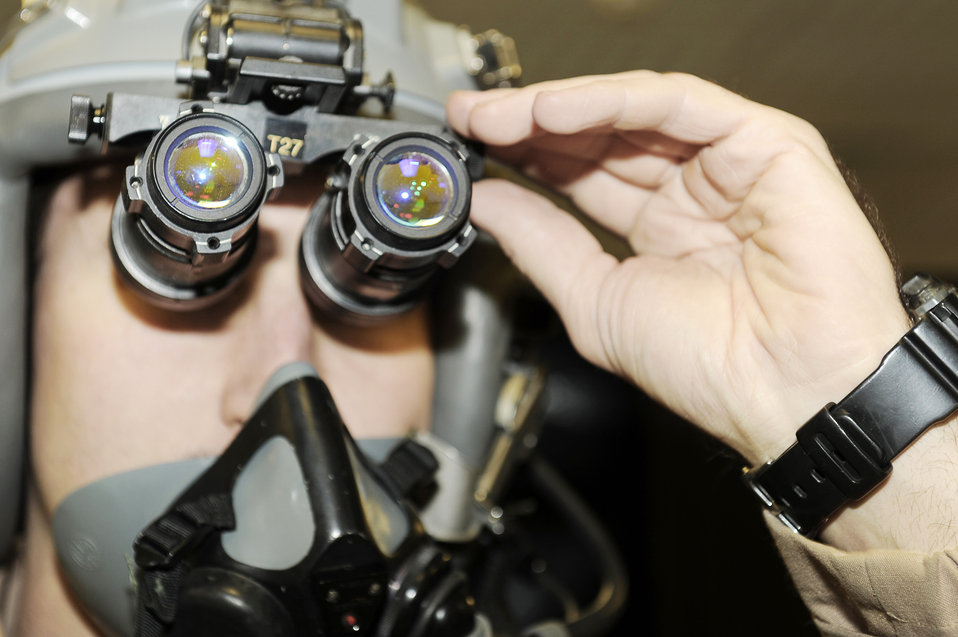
Turn off the lights

Capt. David Snodgrass checks his night vision goggles before a mission Jan. 4, 2010, at Bagram Airfield, Afghanistan. Captain Snodgrass is assigned to the 79th Expeditionary Fighter Squadron at Bagram and is deployed from Shaw Air Force Base, S.C.